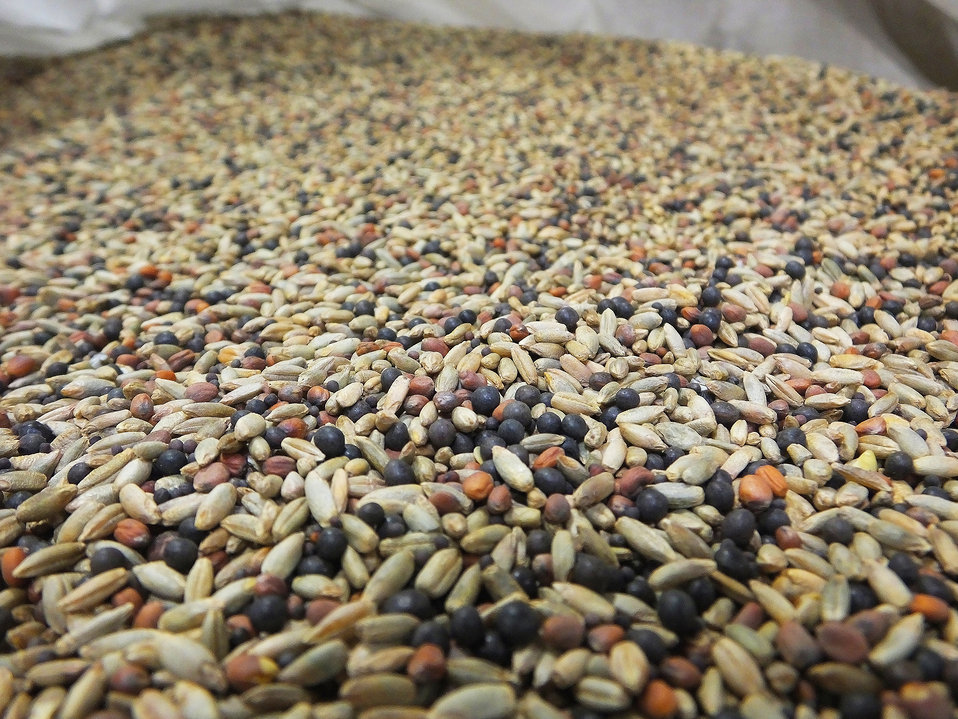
Diversity

In addition to planting rotations, soil health farmers often use a “cocktail mix” of cover crop seed varieties to improve nutrient cycling and to improve soil ecosystem diversity and health.